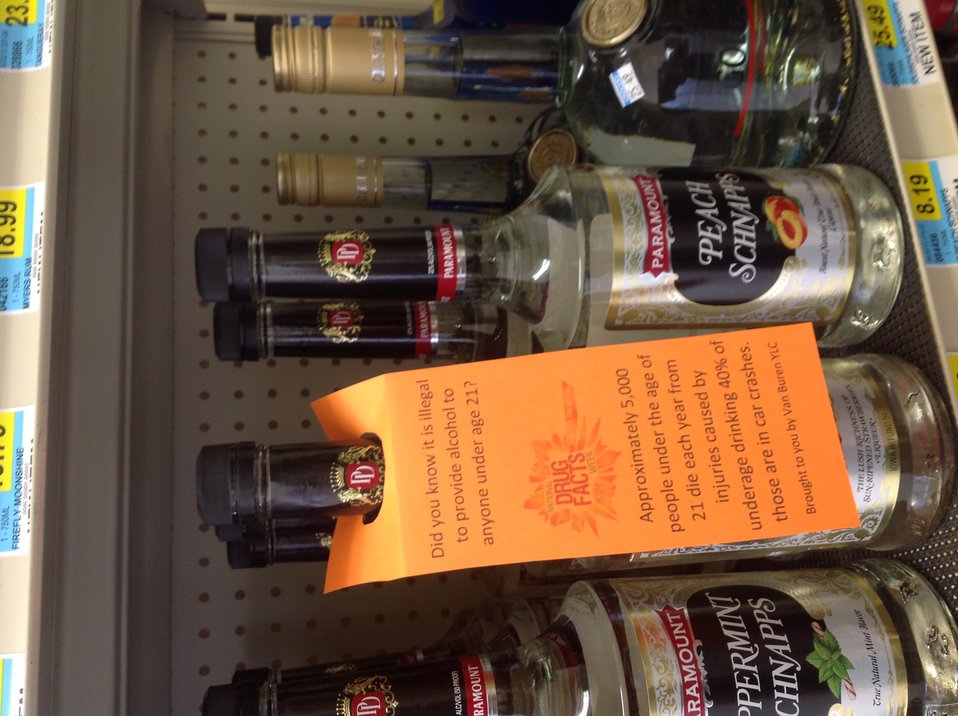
YLC: Getting the Word Out

Teenagers from the Van Buren County SAFE Coalition's, Youth Leadership Council (YLC) in Keosauqua, Iowa participate in various events during National Drug Facts Week, 2014.